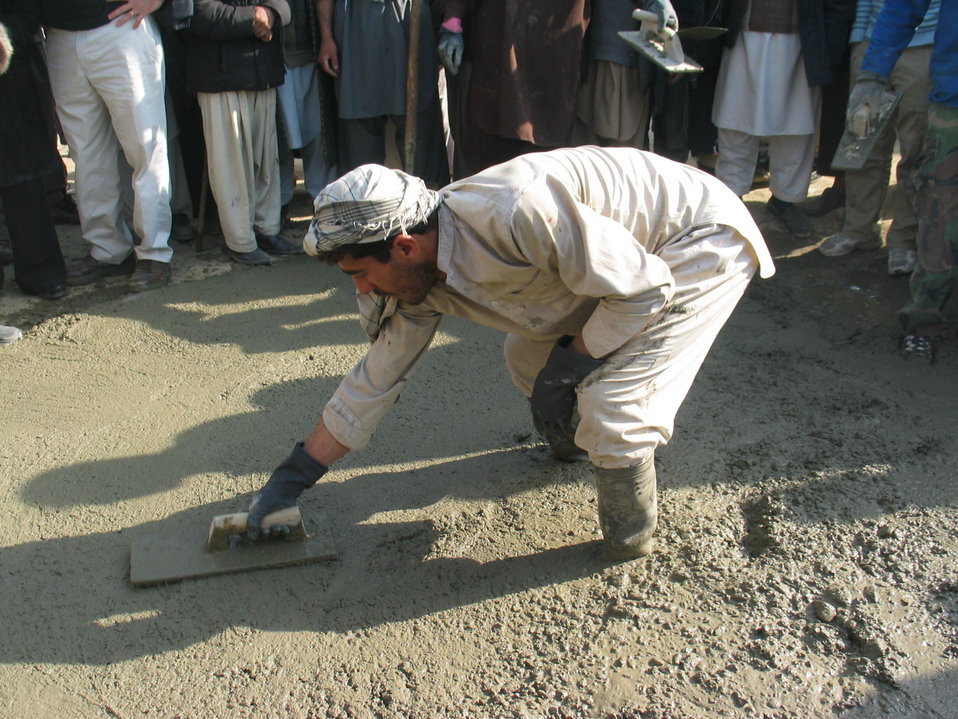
Kabul River Bridge Renovation, December 3, 2010